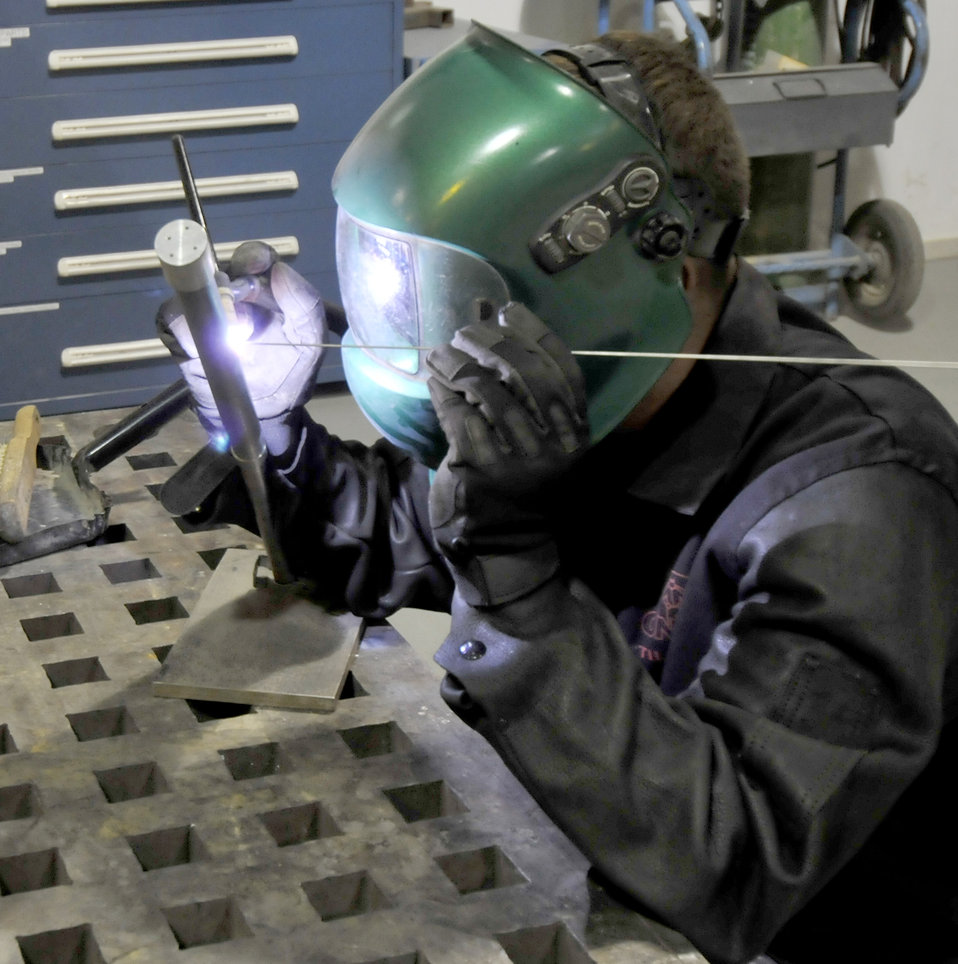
Metals technology

Senior Airman Lloyd Davis welds a titanium certification tube for practice July 21, 2010, at Joint Base Balad, Iraq. Airman Davis is a 332nd Maintenance Squadron metals technology journeyman.